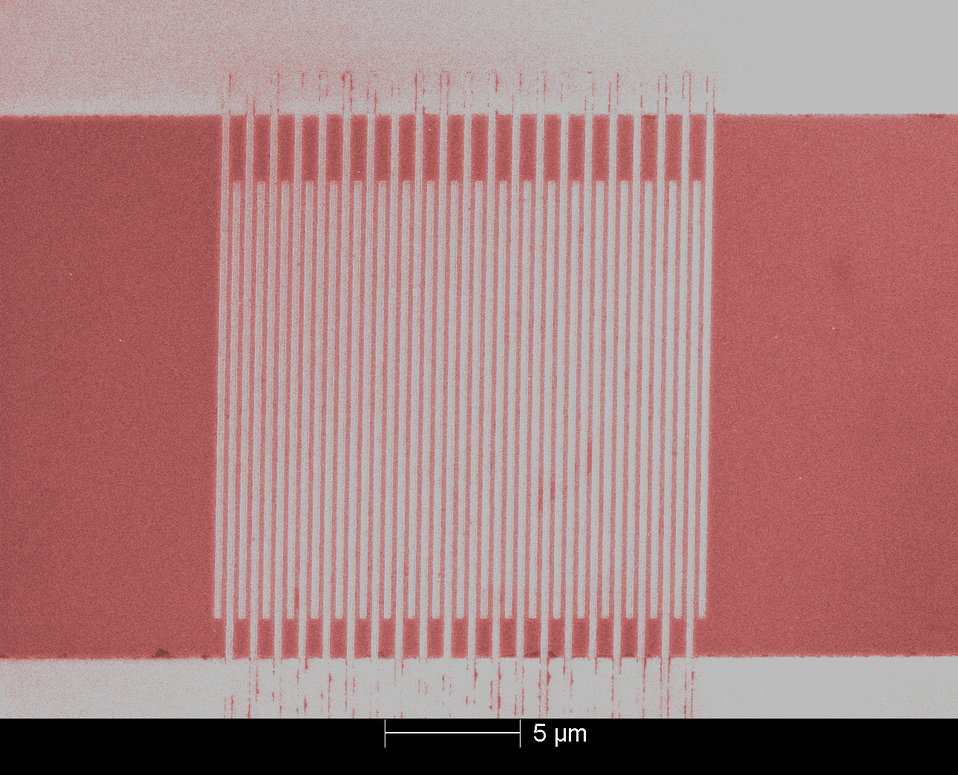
Ultrafast Single-Photon Detector

Colorized micrograph of an ultrafast single-photon detector made of superconducting nanowires. NIST researchers use electron beam lithography to pattern the nanowires (vertical lines) on a thin film of tungsten-silicon alloy, which produces more reliable signals than the niobium nitride material used previously.